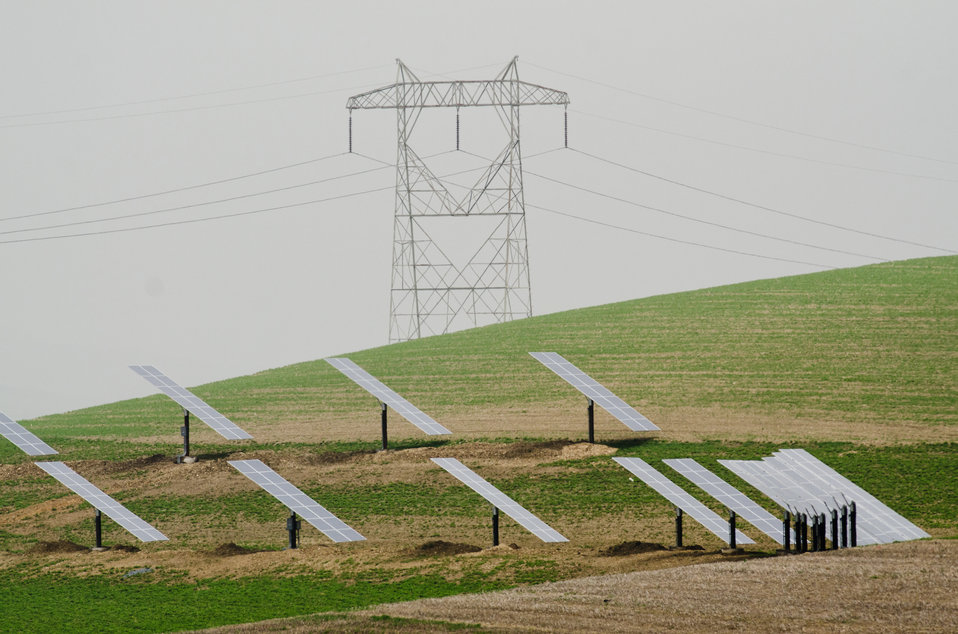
Heidel Hollow Farms has been a family owned farm since 1852 and is currently an 1,800 acre operation in Germansville, PA. Led by David Fink, President of Heidel Hollow Farms, they mainly produce and compact hay for export and grow produce on 300 acres for local sale. With the financial help of the U.S. Department of Agriculture (USDA) an 896 panel solar array was recently installed on non farmable diversion ditches. Rated at 200 kilowatts, they project 240 megawatts of electricity to be produced each year, providing up to 70% of the farms electrical needs. Electrical energy is sent into the local power grid for credit and draw power from the grid with preexisting connections. Photograph was taken on Wednesday, April 20, 2011.